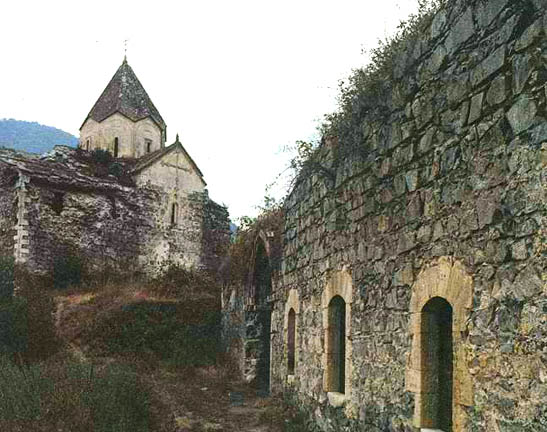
Yerits Mankants Abbey (built around 1691